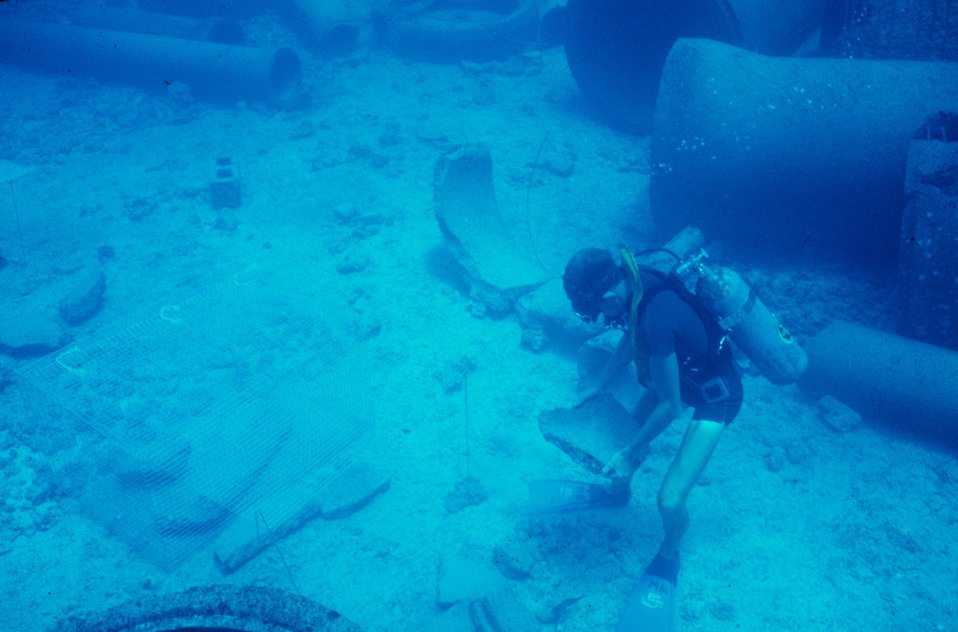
Moving pipe pieces into exclusion cages for grazing study.